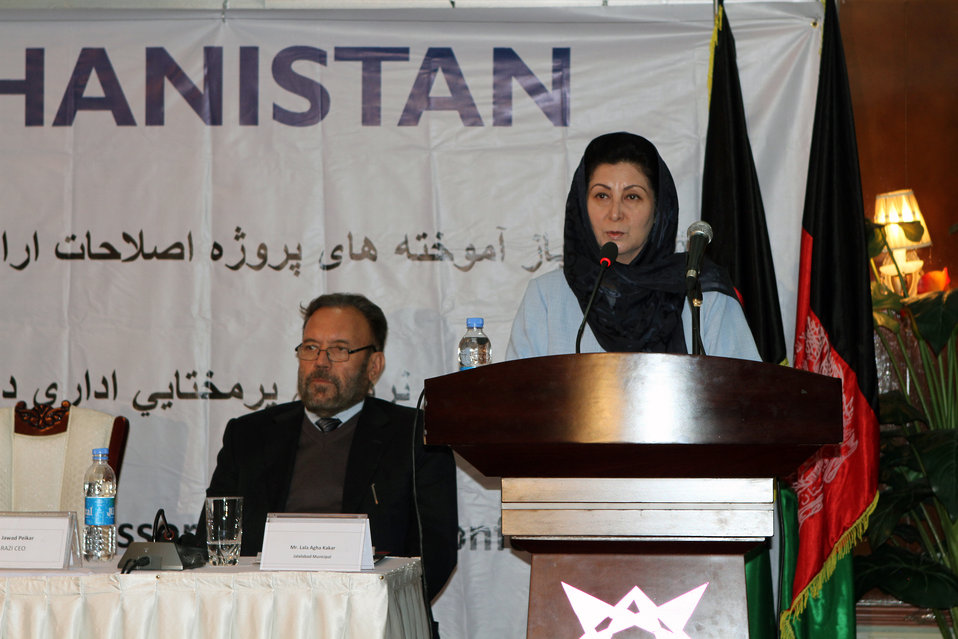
Minister of Women’s Affairs Husn Banu Ghazanfar speaks at the final conference presenting the USAID Land Reform Project achievements in Kabul today